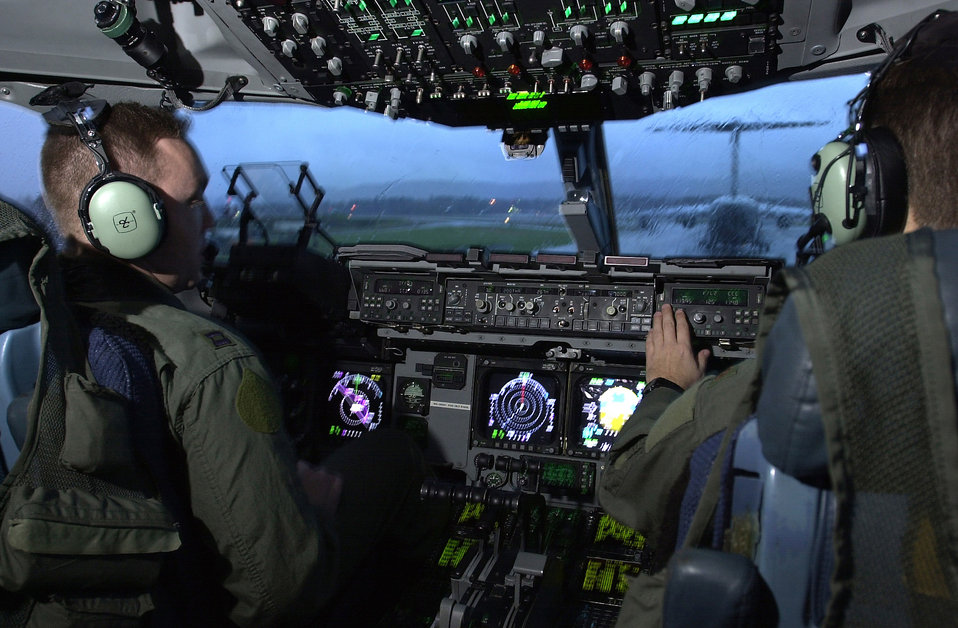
Waiting my turn

OPERATION ENDURING FREEDOM -- Capt. Derek Stuart and Maj. Jesse Strickland, both C-17A Globemaster III pilots from the 17th Airlift Squadron at Charleston Air Force Base, S.C., wait for another C-17 to take off from an operating location in support of Operation Enduring Freedom on Nov. 30. Each humanitarian airdrop flight involves a complex 15-hour mission that requires as much planning as a combat mission.